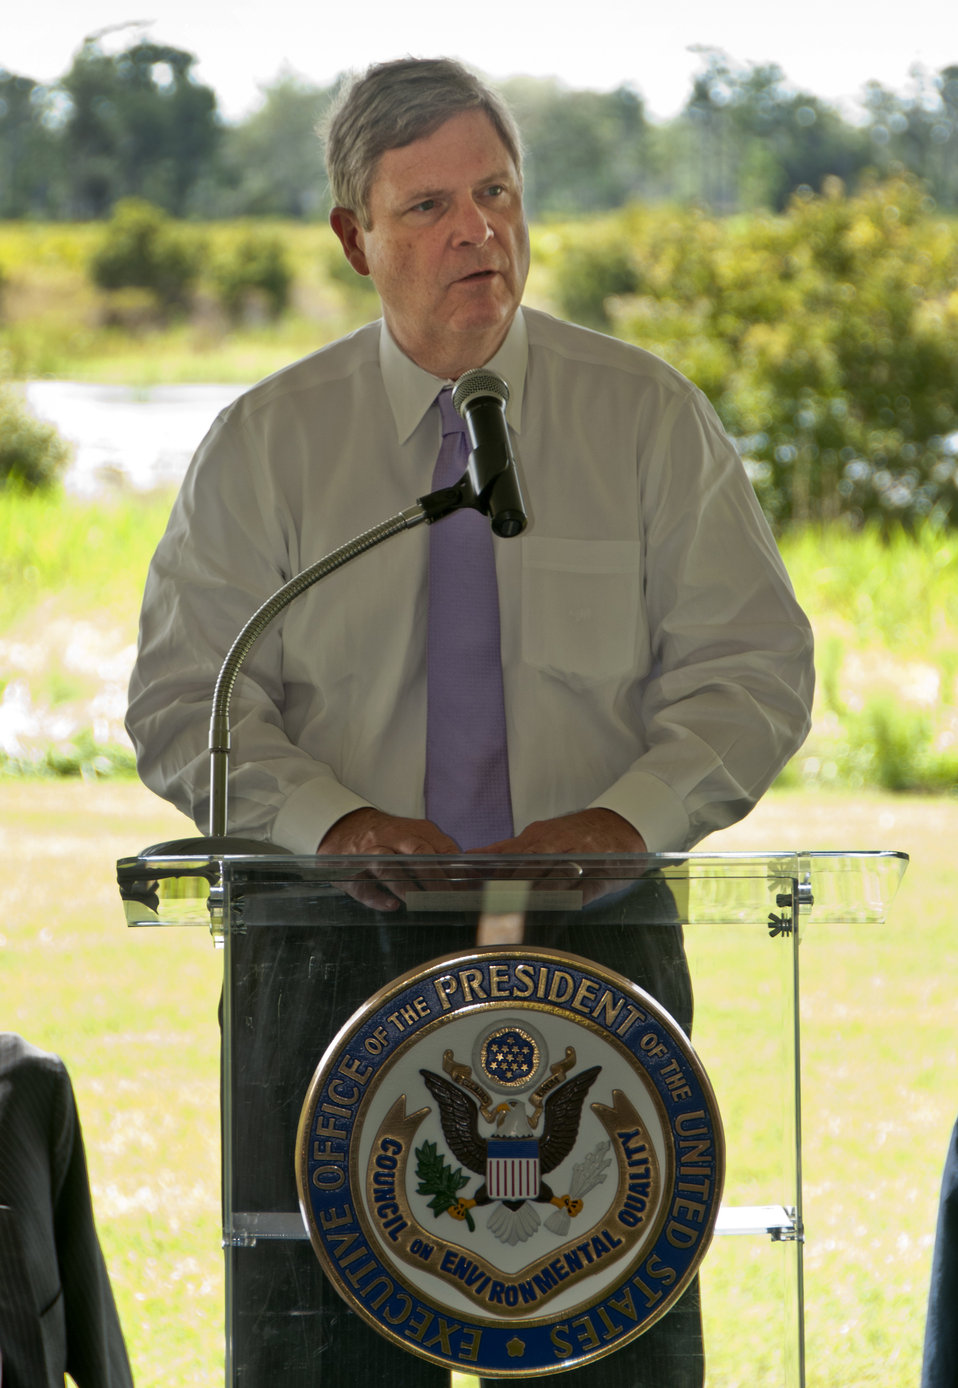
U.S. Department of Agriculture Secretary Tom Vilsack discussed Everglades restoration and announced significant Wetlands Reserve Program (WRP) funding for projects in the Northern Everglades at an America's Great Outdoors event on Friday, July 13, 2012 in Kissimmee, FL.